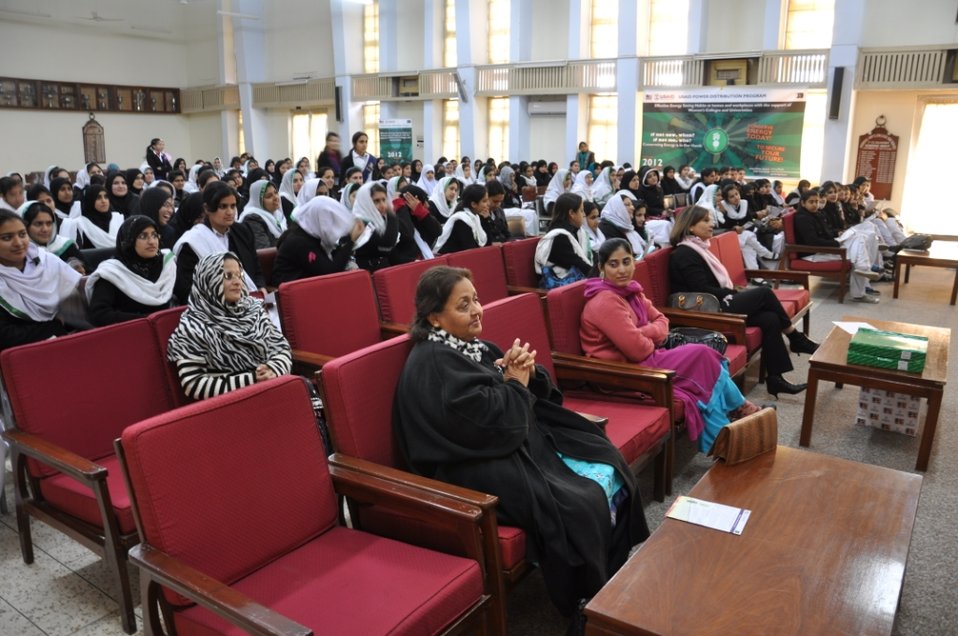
Effective Energy Saving Habits Campaign

Islamabad, January 26, 2012 - More than 650 students attended gender sessions.